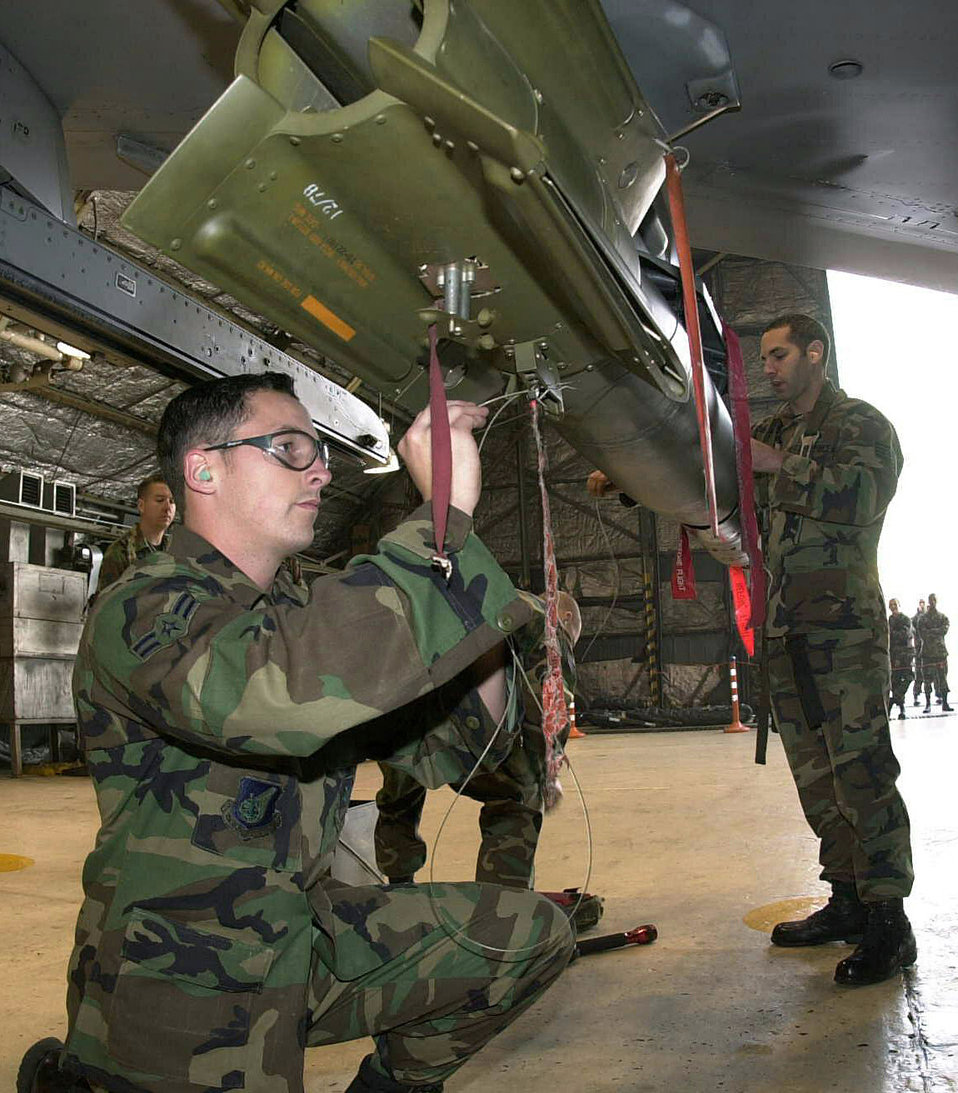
Load crew competition

OSAN AIR BASE, South Korea -- Airman 1st Class Jason Lemke (left) and Staff Sgt. Paul Kaehler secure a guided bomb unit-12 onto an F-16 Fighting Falcon during a load crew competition here Nov. 11.